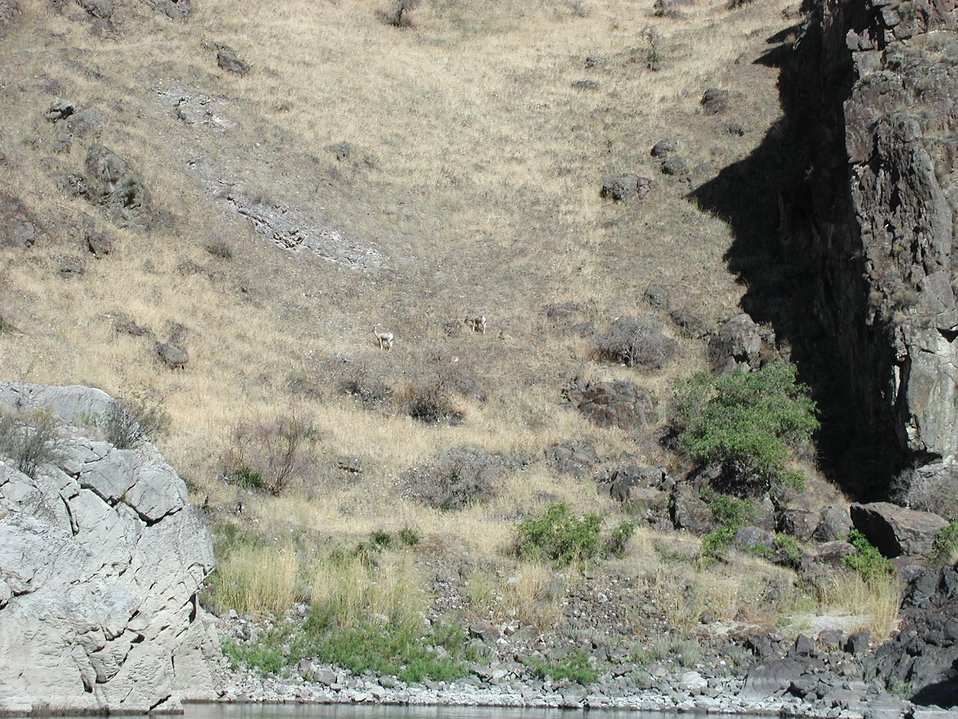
Rocky Mountain Bighorn Sheep Lower Salmon River Cottonwood Field Office UCSC Upper Columbia Salmon Clearwater District